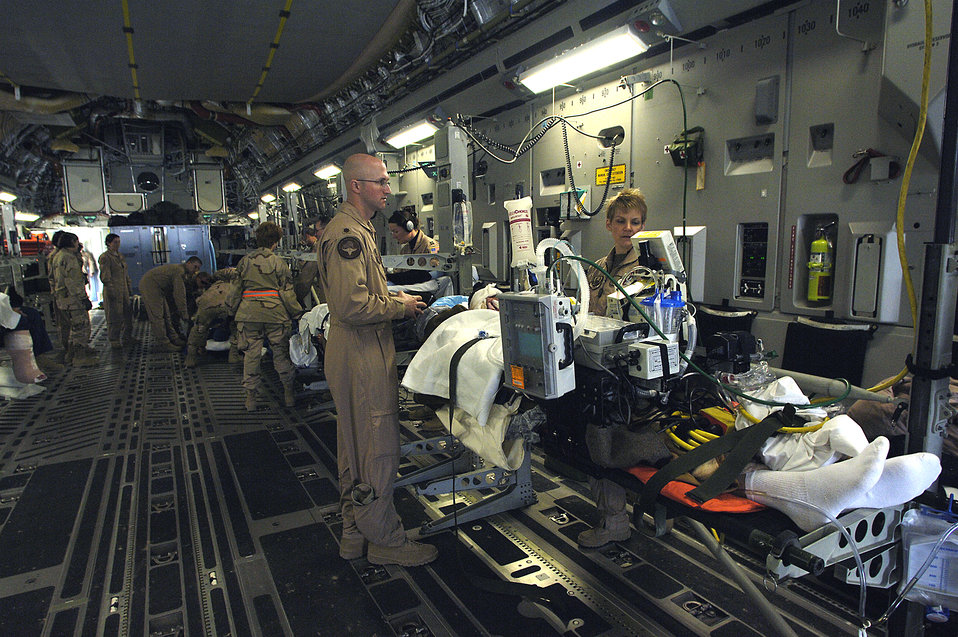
Reserve Airmen contributing to medical mission in Iraq

Airmen of the 332nd Expeditionary Medical Group care for patients aboard a waiting Air Force Reserve C-17 Globemaster III for a medical evacuation flight to Landstuhl Regional Medical Center in Germany for further treatment. The Globemaster is from March Air Reserve Base, Calif.